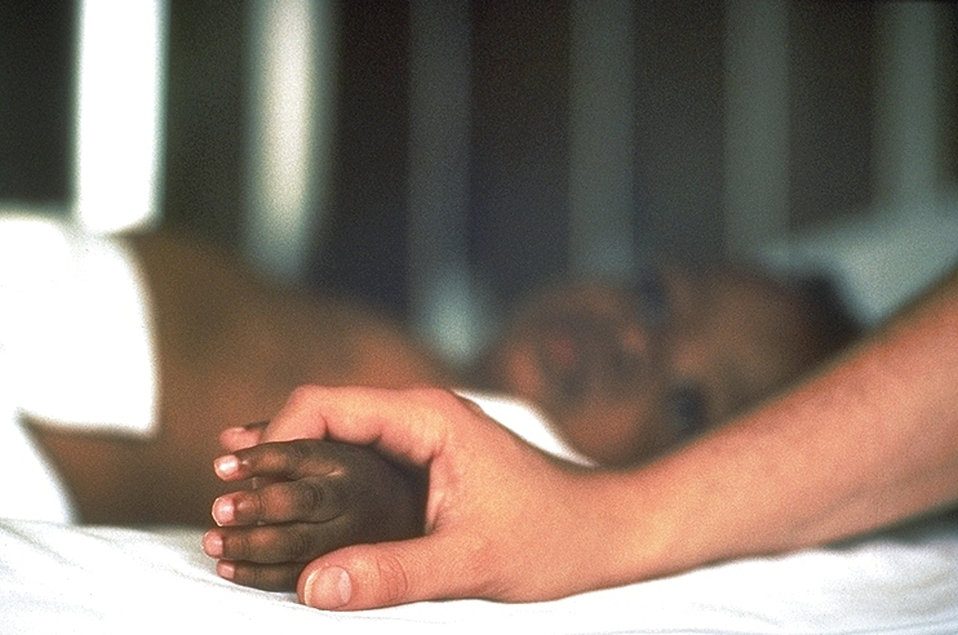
Nurse holding child's hand.